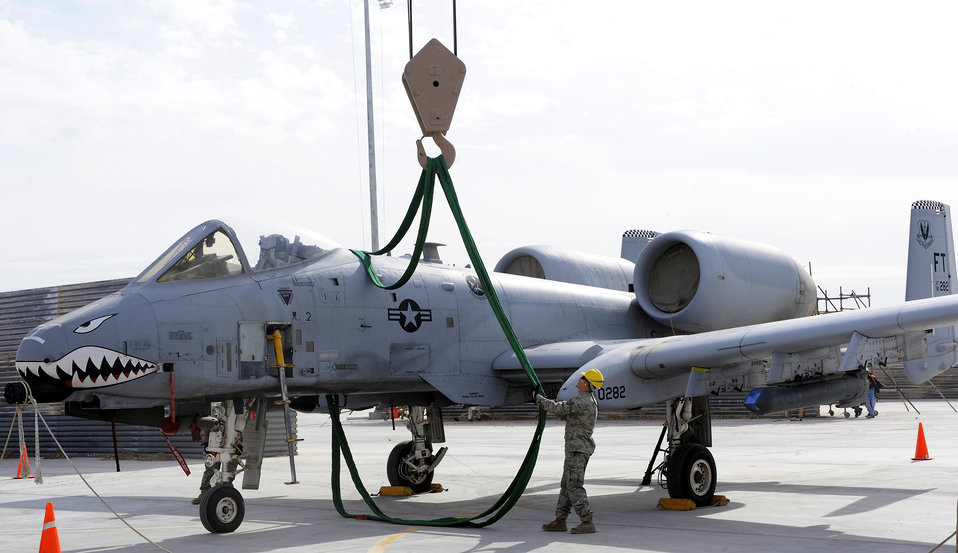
Crash team clears runway

Staff Sgt. David Cook positions an aircraft sling for a lift exercise Feb. 09, 2011, at Kandahar Airfield, Afghanistan. A handful of crash recovery personnel work with phase crew chiefs to quickly and safely respond to all U.S. aircraft with in-flight emergencies and emergencies on the airfield. Sergeant Cook is an A-10 Thunderbolt II phase technician assigned to the 451st Expeditionary Maintenance Squadron.